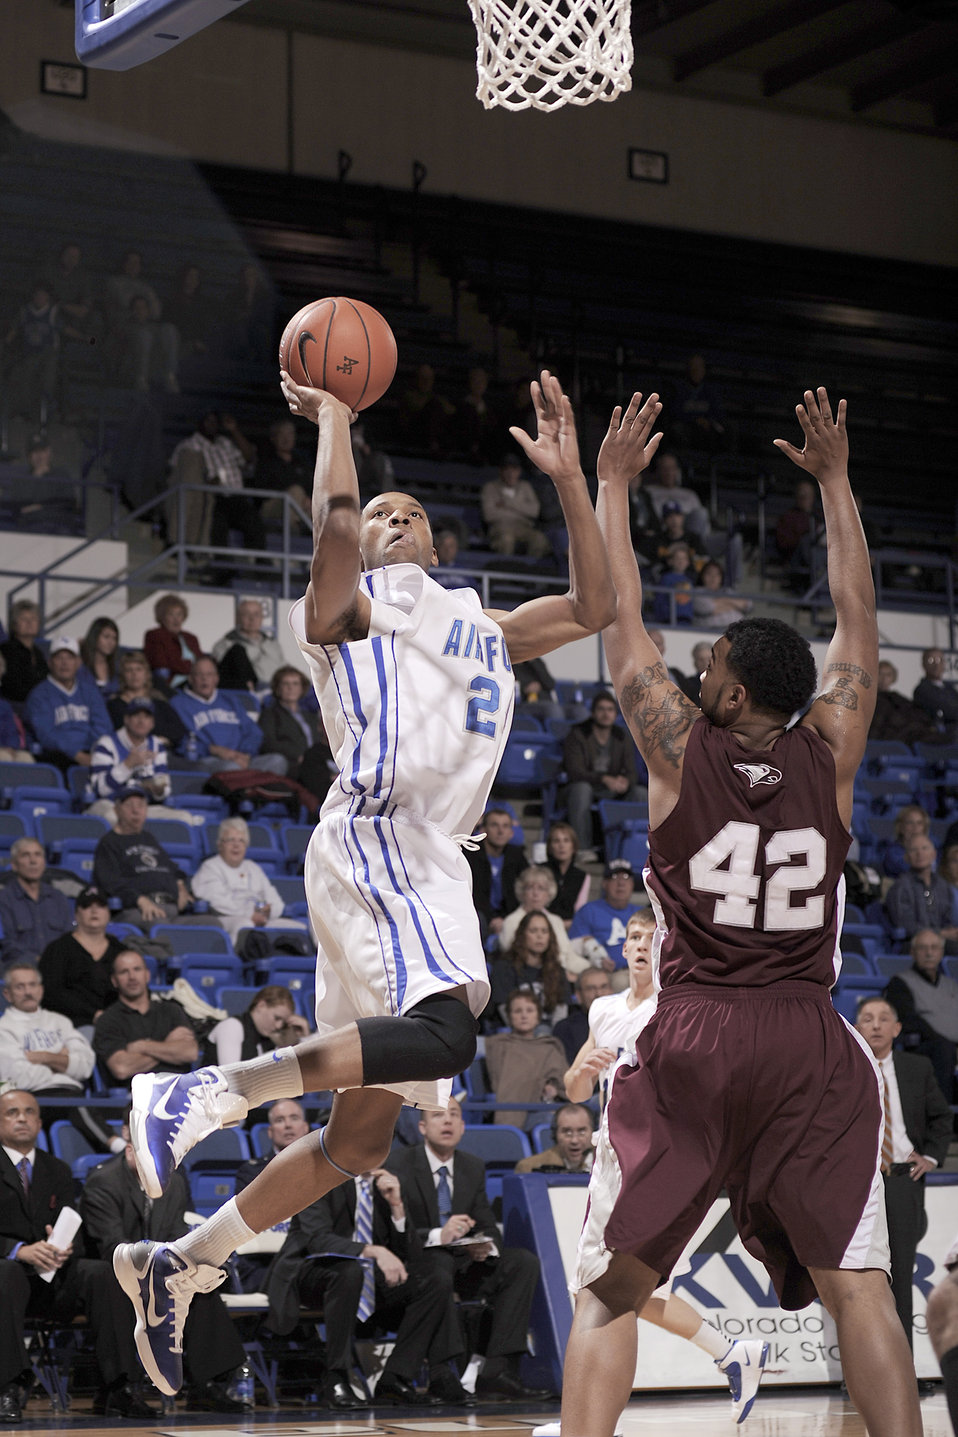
Falcons defeat the Eagles

Falcon forward Derek Brooks goes up for two of his five points against the Eagles' Dijon Manns as the U.S. Air Force Academy defeats North Carolina Central 73-56, Dec 11, 2010, at Clune Arena in Colorado Springs, Colo. Brooks also tied his career high with seven rebounds.